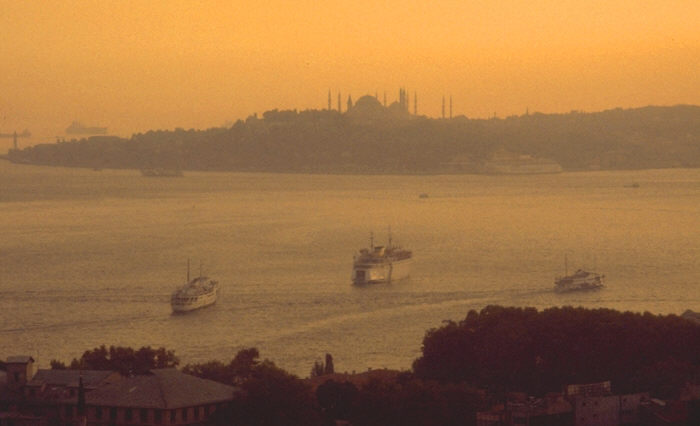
Evening in Istanbul, Turkey.